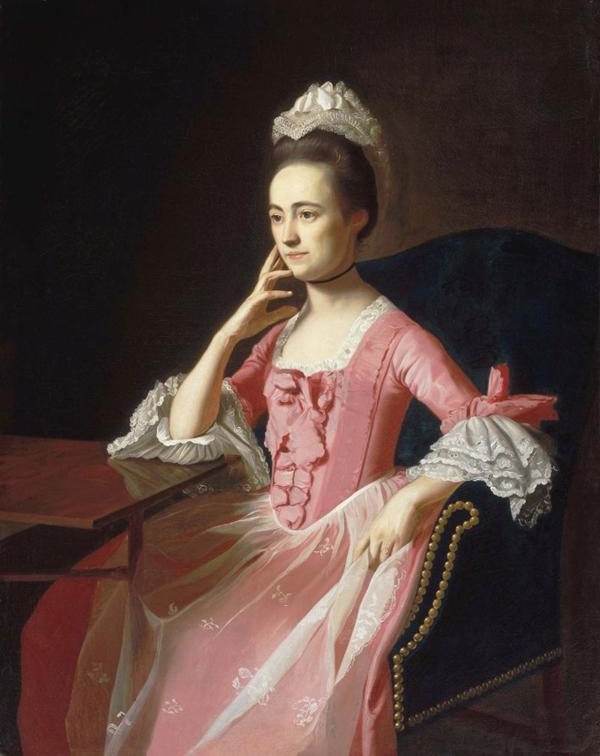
Dorothy Quincy Hancock